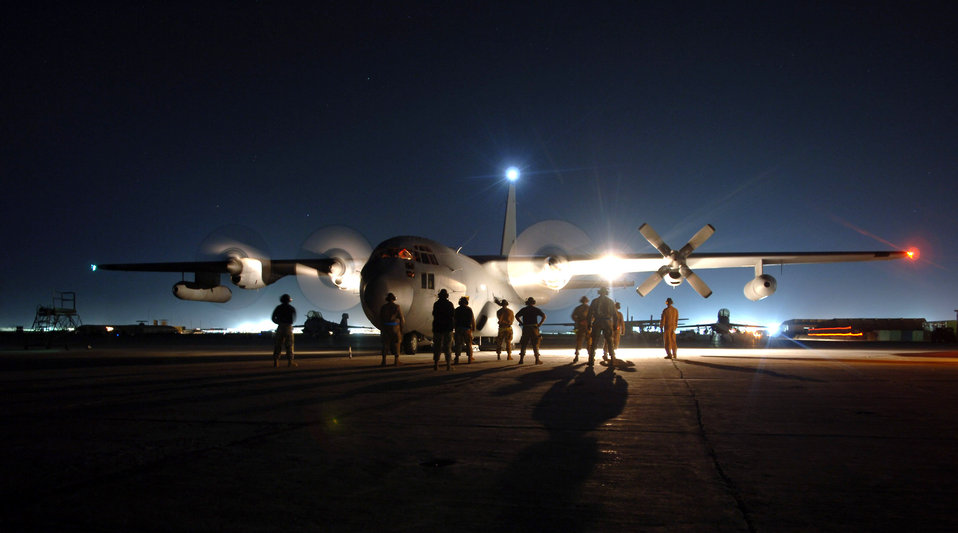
Compass Call keeps jamming

Maintainers at Bagram Air Base, Afghanistan, stand by as the aircrew starts the engines on an EC-130H Compass Call's. The aircraft is assigned to the 41st Expeditionary Electronic Combat Squadron. The Compass Call is an airborne tactical weapon system used to deny, degrade and disrupt the enemy's ability to communicate. Since April 2004, 41st EECS EC-130s have flown more than 700 combat sorties supporting ground forces in Operation Enduring Freedom.